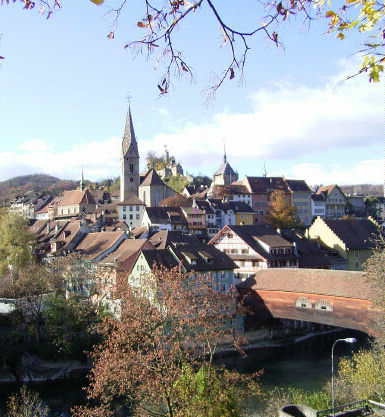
Baden old town